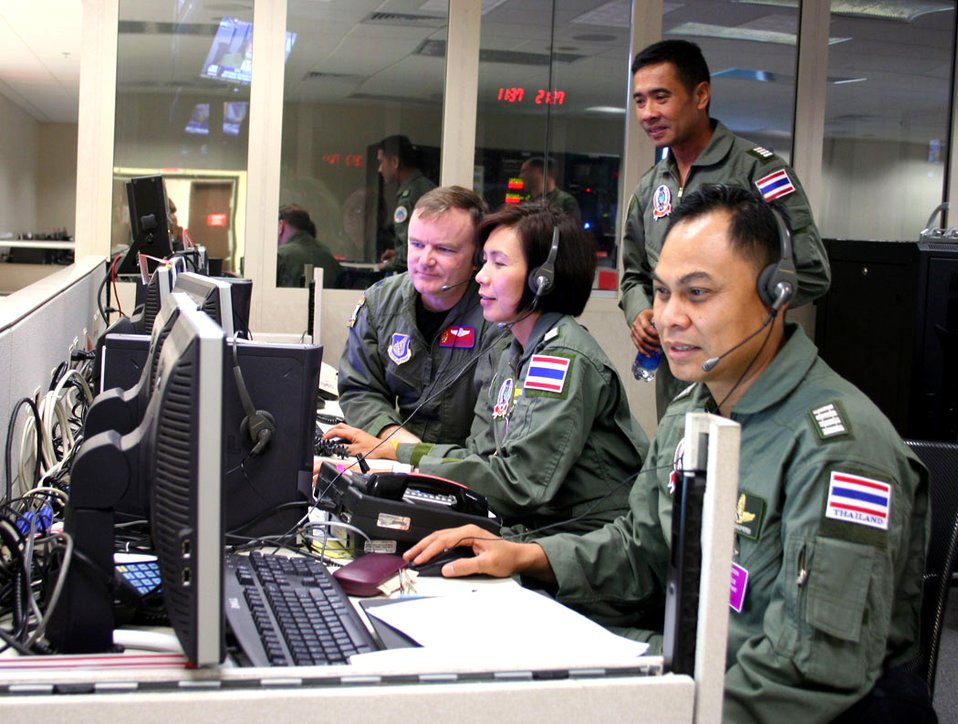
Kenney Headquarters maximizes support to joint warfighters

Lt. Col. Curt Walker (left), Wing Commander Sumana Chulamokha, Group Capt. Suwit Wattanaroek (standing) and Group Capt. Noi Parkperm coordinate air operations at the Gen. George C. Kenney Headquarters during the 25th annual Cobra Gold exercise on Tuesday, May 23, 2006. The exercise is hosted by Thailand at Hickam Air Force Base, Hawaii, from May 15 to 26. It demonstrates the planning, execution and reach-back capabilities the headquarters can provide in a contingency. Colonel Walker is with the combat operations division at Kenney Headquarters and the three Thai officers are with the Royal Thai Air Force.